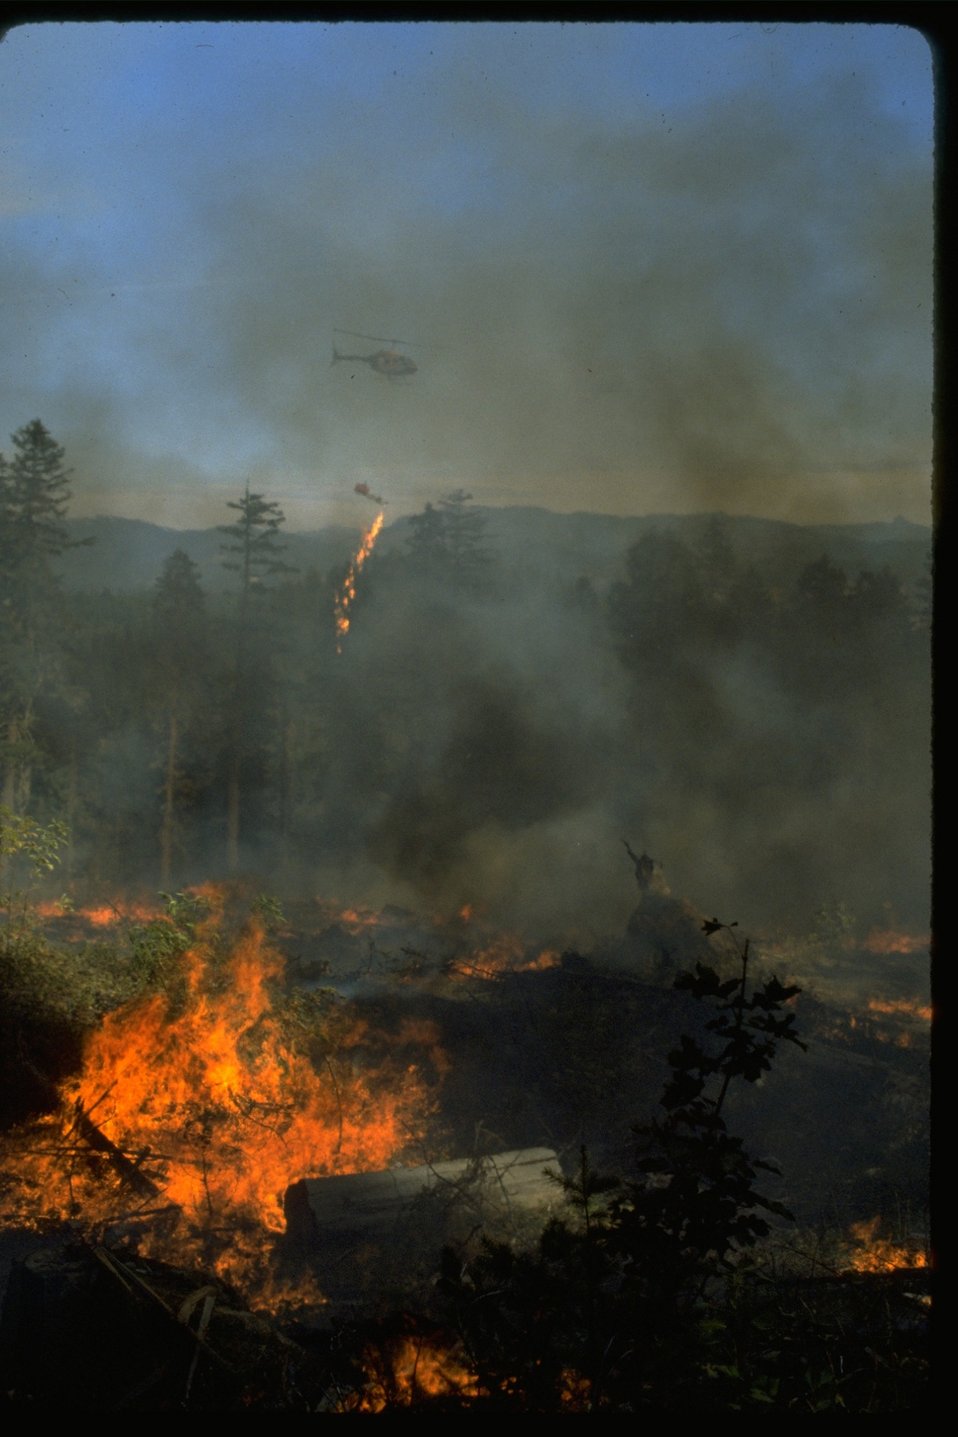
Heli-torching a prescribed fire.